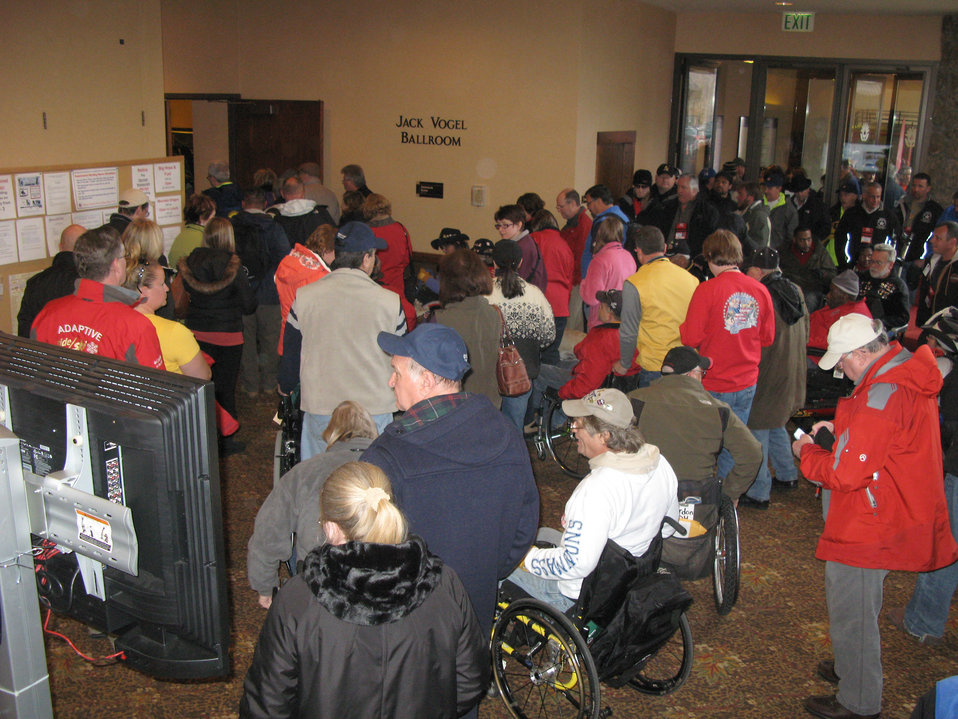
Disabled veterans sports clinic opens in Colorado

Disabled veterans arrive for opening ceremonies of the 25th National Disabled Veterans Winter Sports Clinic March 27, 2011, at Snowmass Village, Colo.